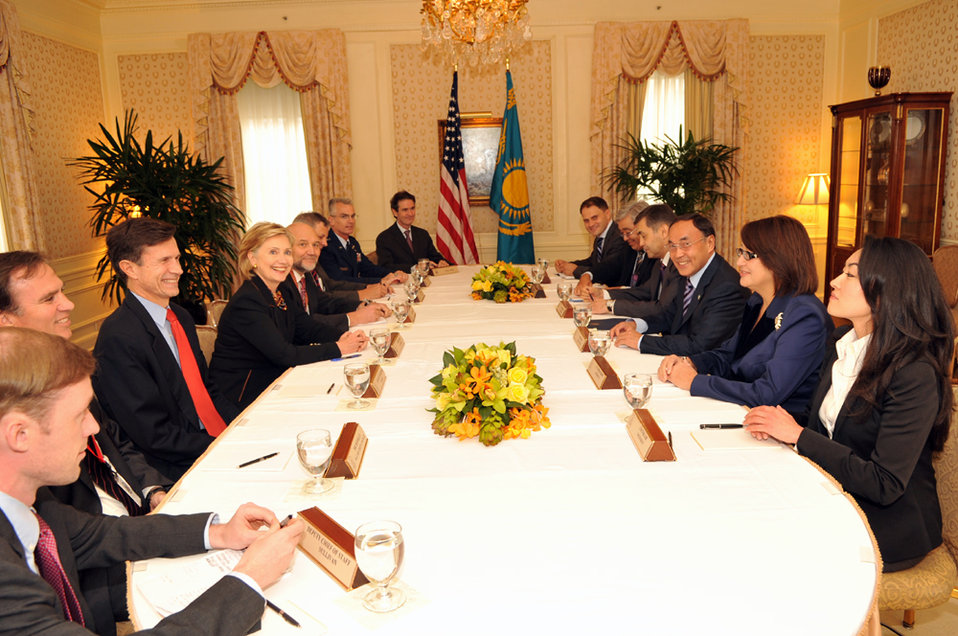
UNGA 2009: Secretary Clinton Meets With Kazakhstani Foreign Minister

U.S. Secretary of State Hillary Rodham Clinton meets with Kazakhstani Foreign Minister Kanat Saudabayev at the Waldorf Astoria hotel in New York City, New York September 26, 2009.